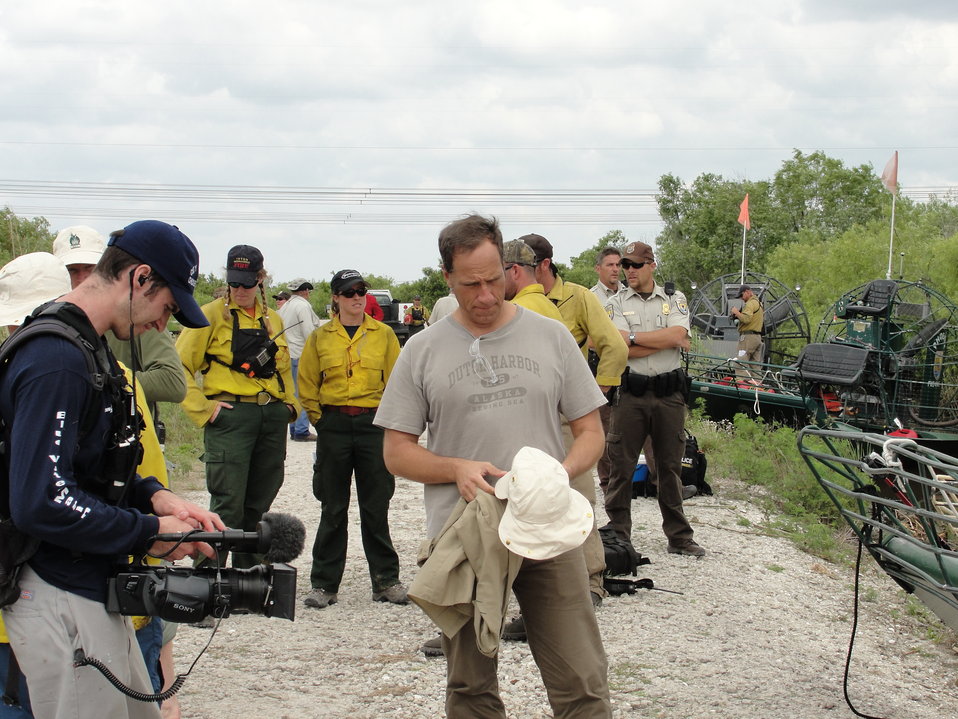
A little down time

Mike Rowe, the popular host of the Discovery Channel series